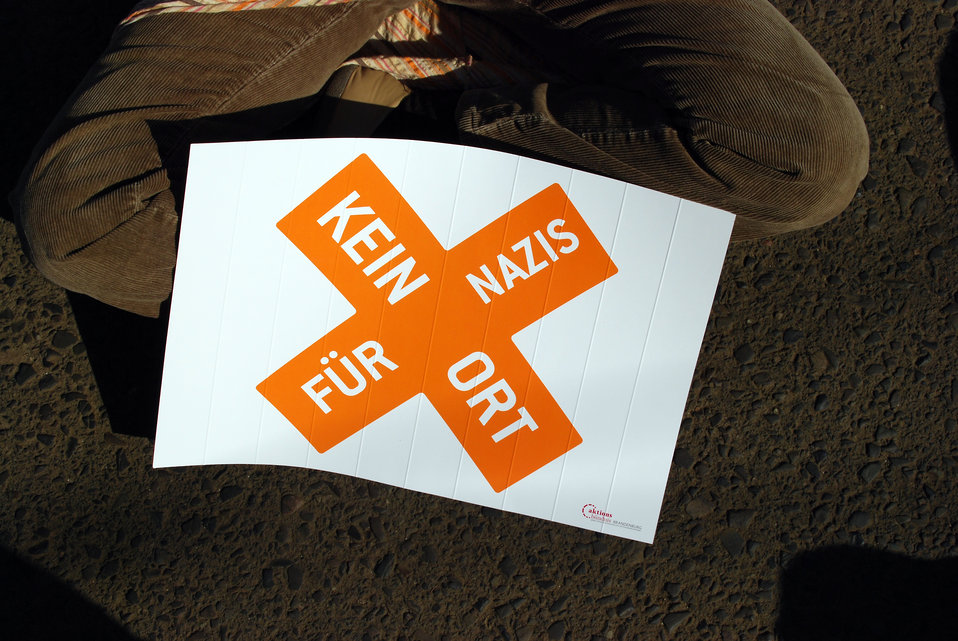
Proteste gegen den Nazi-Aufmarsch am 24.3.2012 in Frankfurt (Oder)